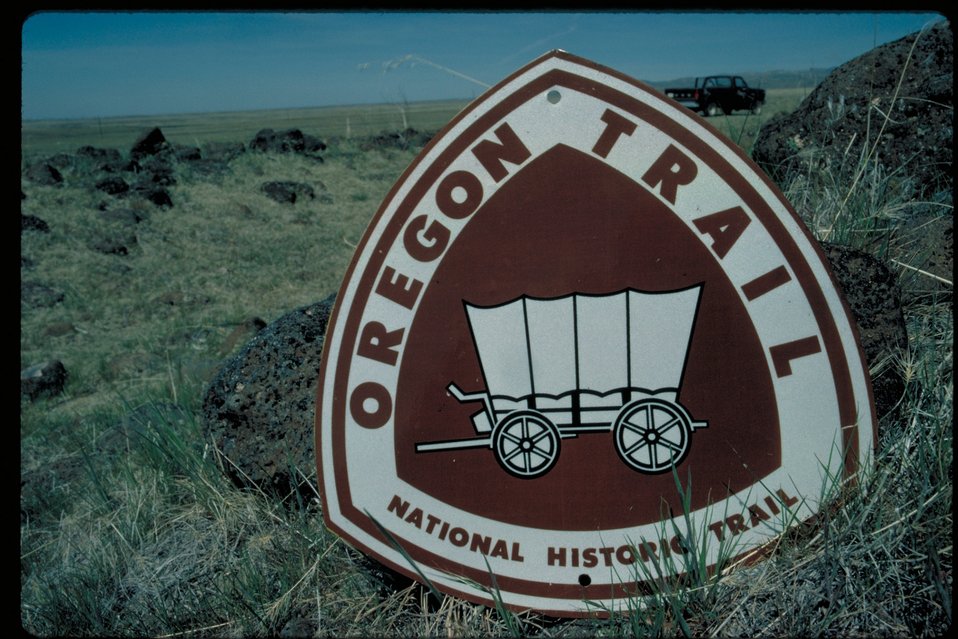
Oregon Trail sign Northwest of Canyon Creek Lower Snake River District